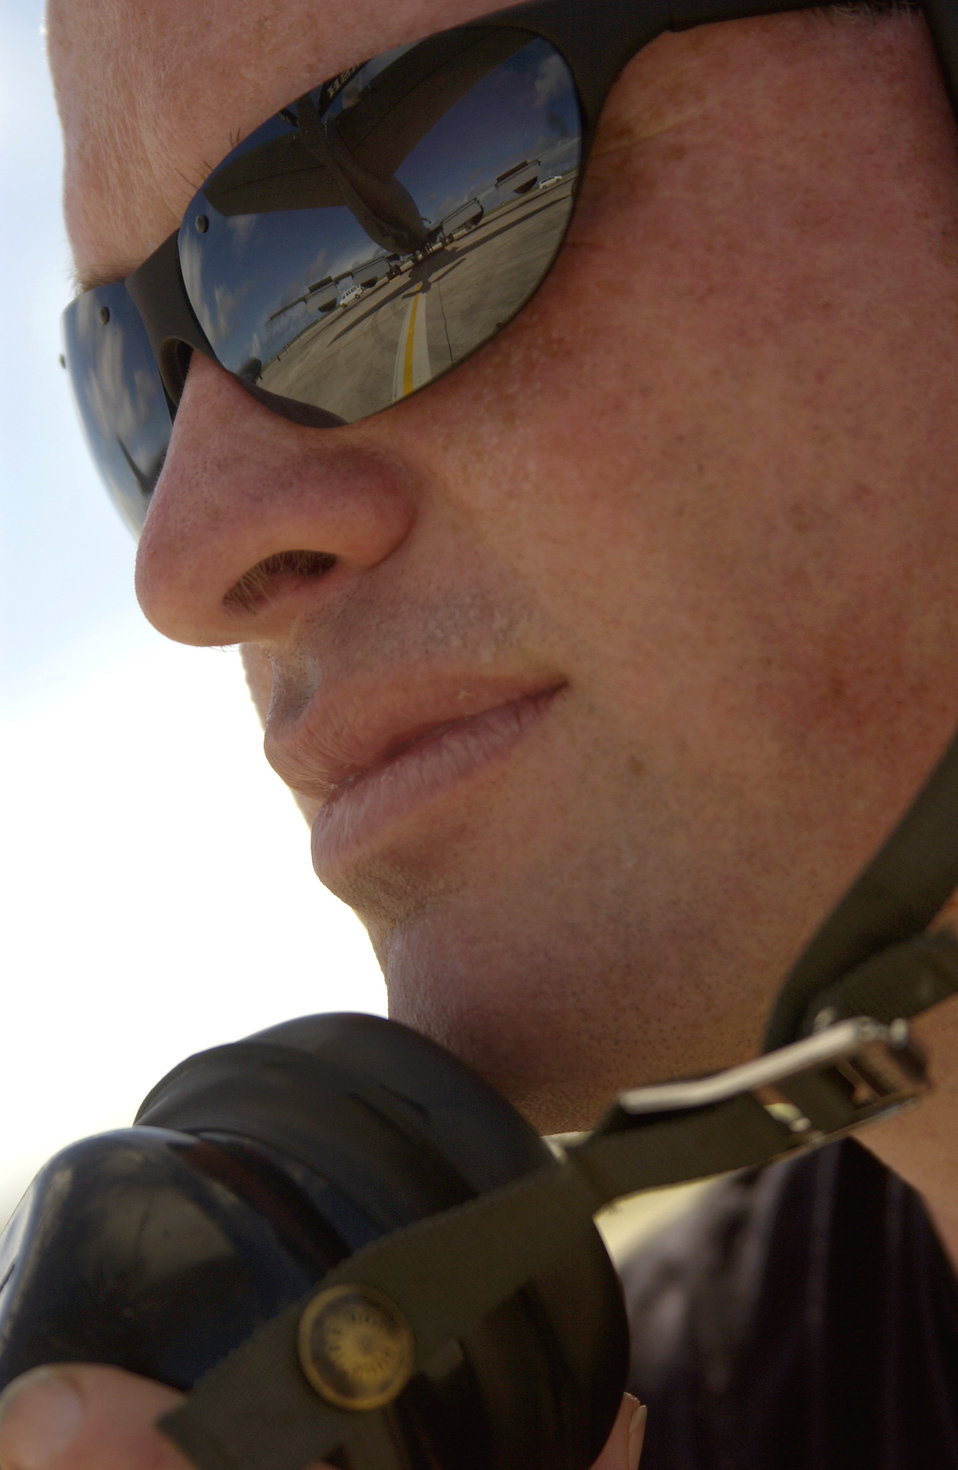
It's all good

ANDERSEN AIR FORCE BASE, Guam - Tech. Sgt. Dave Burts supervises an operations check on the rear flight controls of a KC-135 Stratotanker before takeoff here recently. Sergeant Burts is a crew chief assigned to the Washington Air National Guard's 141st Air Refueling Wing at Fairchild Air Force Base, Wash.